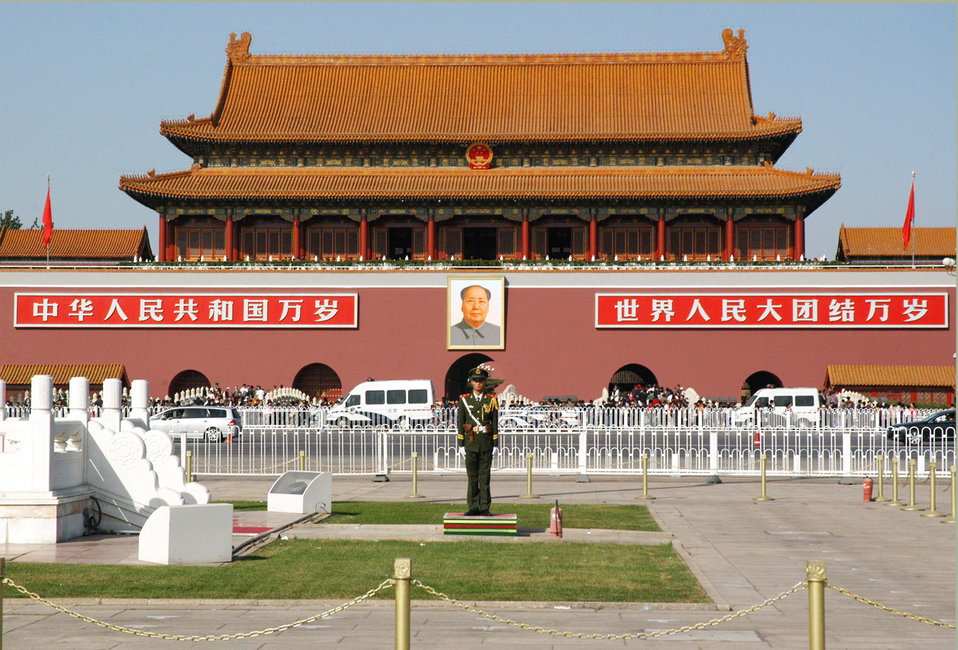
Gate of heavenly peace

Prc soldier at tiananmen.